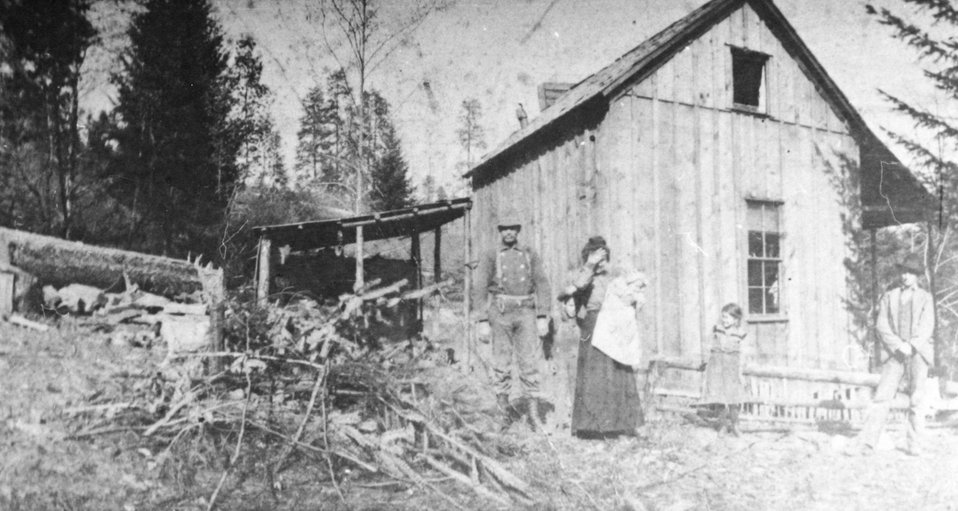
Tom, Anna, Marial Billings and baby.